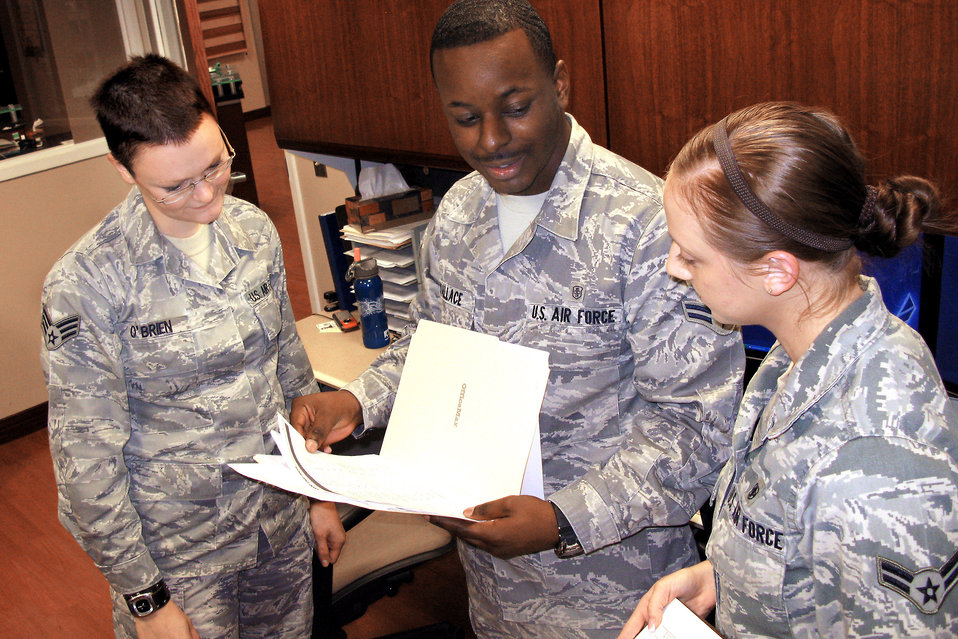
Wounded warriors get heros' welcome at Andrews

Senior Airman Hannah O'Brien, Airman 1st Class Brandon Wallace and Airman 1st Class Chelsey Morgan prepare for a flight arriving with patients being medically evacuated to the United States through the 779th Aeromedical Staging Facility at Andrews Air Force Base, Md.